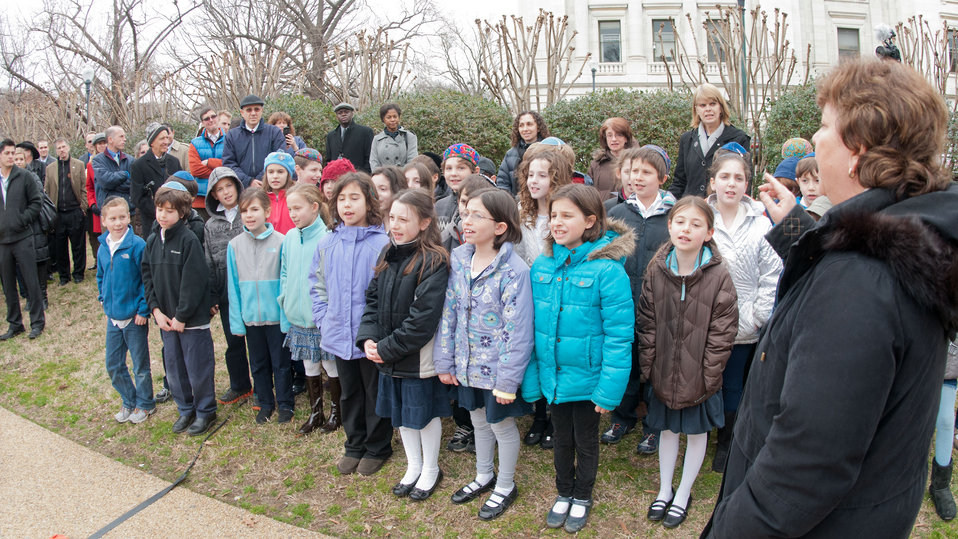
The third grade class of the Jewish Primary Day School of the Nation’s Capital is lead by their third grade Hebrew Teacher Gila Efrati (right), as they sing “Almond Trees Blossom' to the attendees, during the Celebration of Tu B’Shevat “The New Year of the Trees” event, at the District of Columbia western lawn next to the USDA Headquarters, Whitten Building at 14th Street and Independence Ave SW, Washington, D.C. on Wednesday, February 8, 2012.